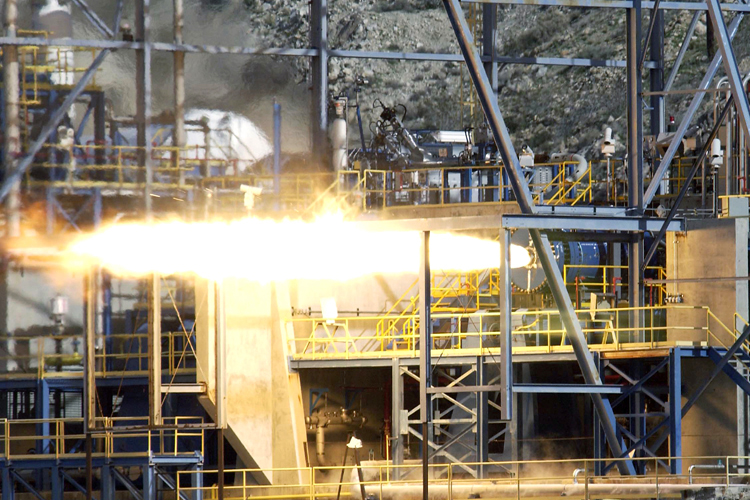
Hybrid rocket successfully tested

EDWARDS AIR FORCE BASE, Calif. -- A large hybrid rocket motor successfully fires on its test stand here recently. The test took place on an Air Force Research Laboratory test stand on a ridge overlooking the dry lake bed and surrounding Mojave Desert here.